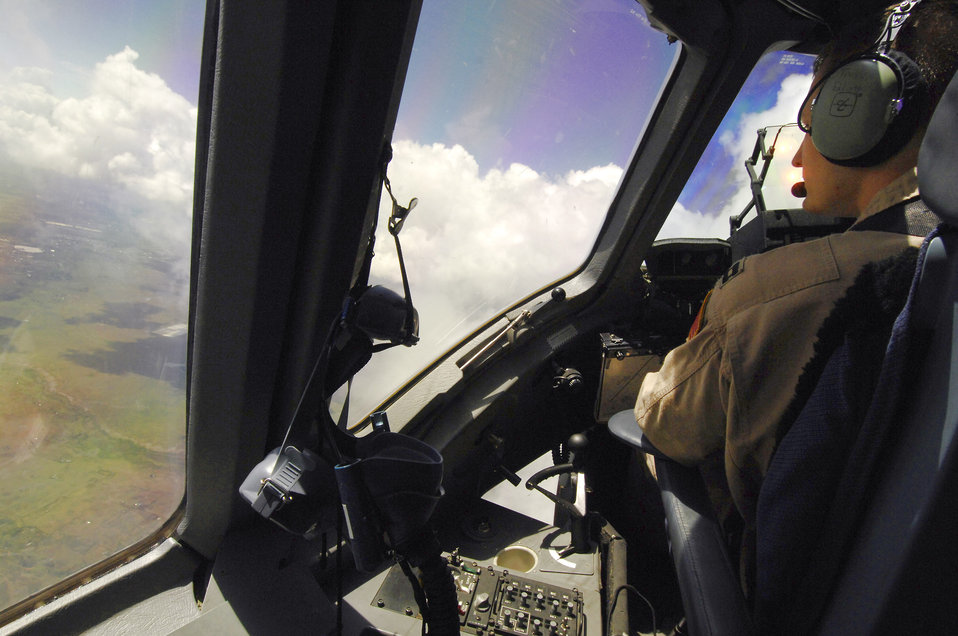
April 8 airpower summary: C-17s transport supplies

Air Force Capt.Travis Elliot takes off in a C-17 Globemaster III from Nairobi, Kenya after transporting 20 Navy Seabees, two water well drilling rigs and more than 100,000 pounds of equipment as part of a humanitarian well drilling mission enabling critical water supplies to regions in severe drought conditions. Capt. Elliot is an aircraft commander assigned to the 816th Expeditionary Airlift Squadron and is deployed from Charleston Air Force Base, S.C.